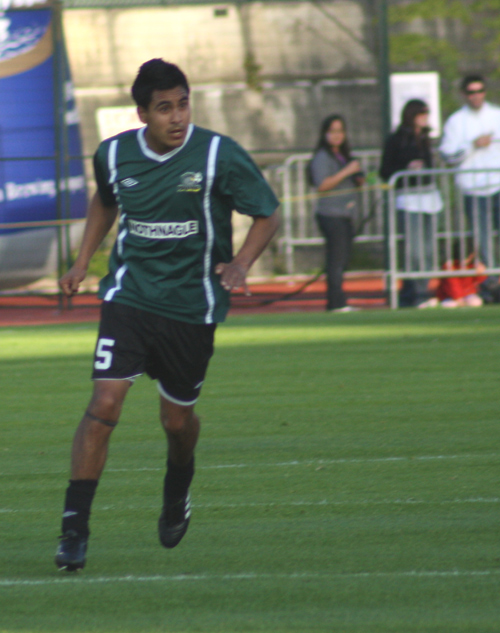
Alfonso Motagalvan, playing in Vancouver on May 22, 2010